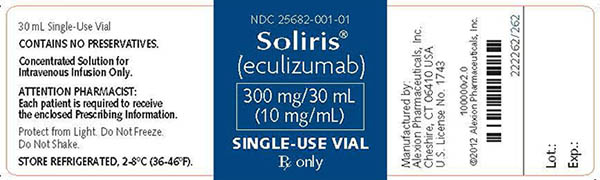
RECALLED – Soliris (eculizumab)

June 2, 2014 – Product Recall – Alexion Initiates Voluntary Nationwide Recall of Certain Lots of Soliris® (eculizumab) Concentrated Solution for Intravenous Infusion Due to the Presence of Visible Particulate Matter in a Single Lot.